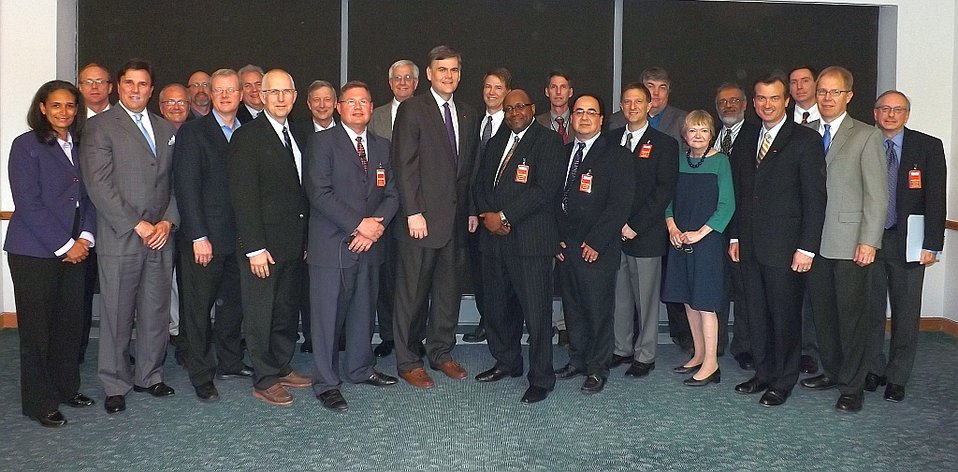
DuPont Experimental Station Visit

Dr. William Provine, (center) Director, DuPont Science and Technology, and DuPont Research Managers welcome Dr Willie May (center right) NIST Associate Director for Laboratory Programs, and Mike Molnar (center left) NIST Chief Manufacturing Officer along with NIST scientists to a tour of the DuPont Experimental Station in Wilmington Delaware.